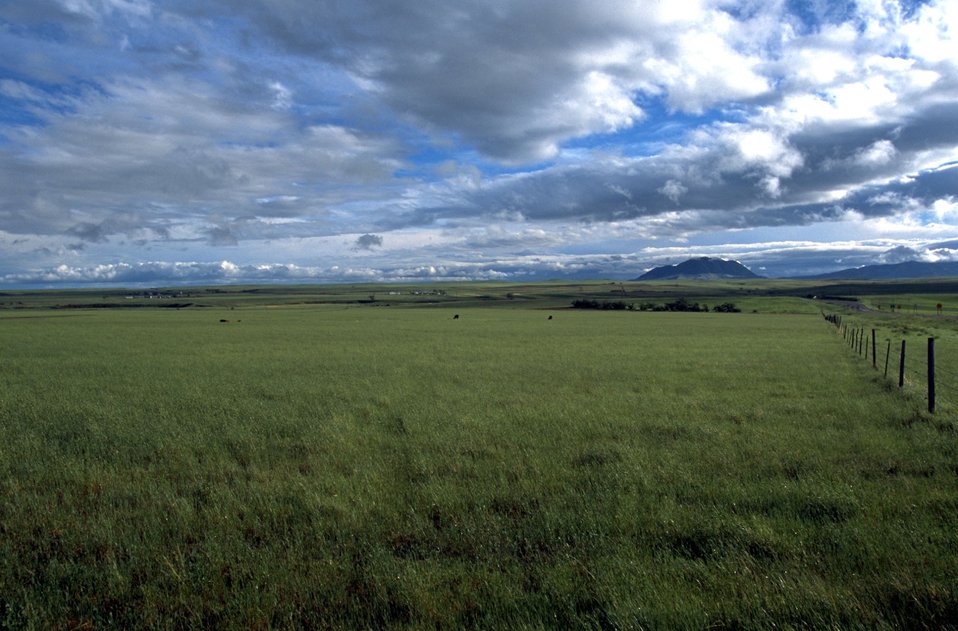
Cows grazing on luxuriant vegetation with Black Butte in the background